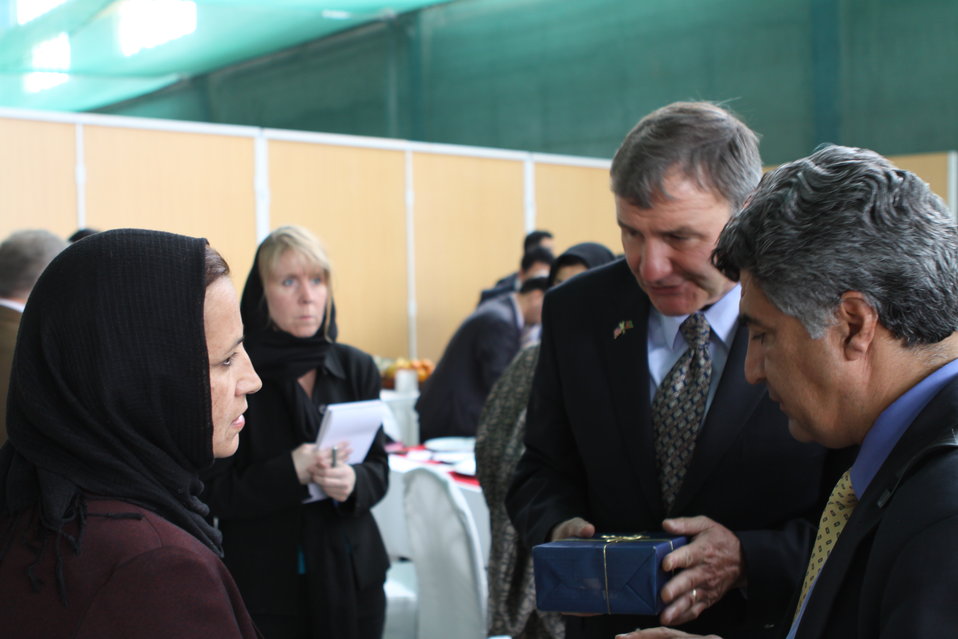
100525 Hirat Marble Conference 547